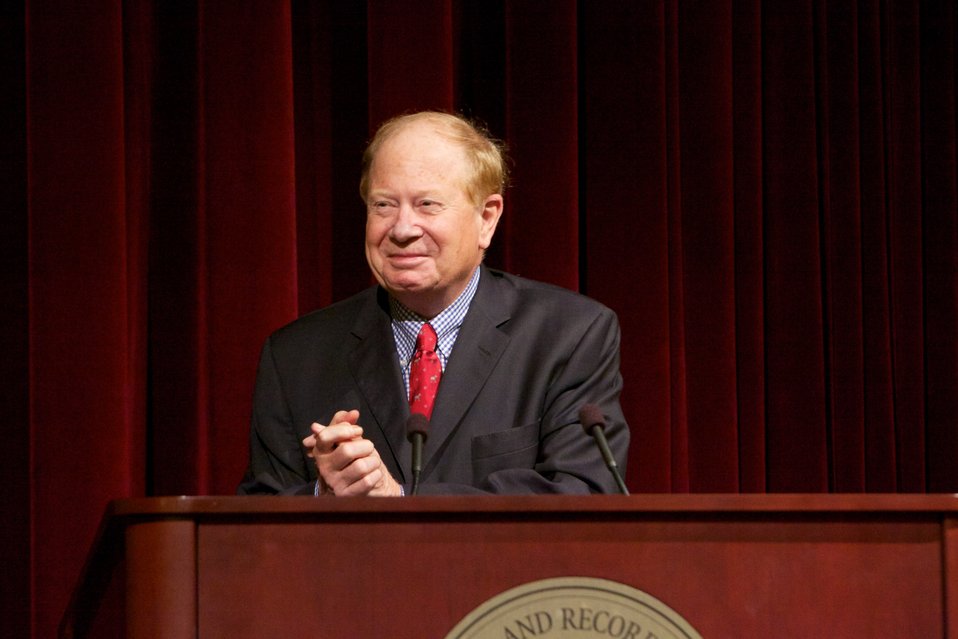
Revolutionary Summer; Joseph Ellis, author, discusses his book Revolutionary Summer: The Birth of American Independence